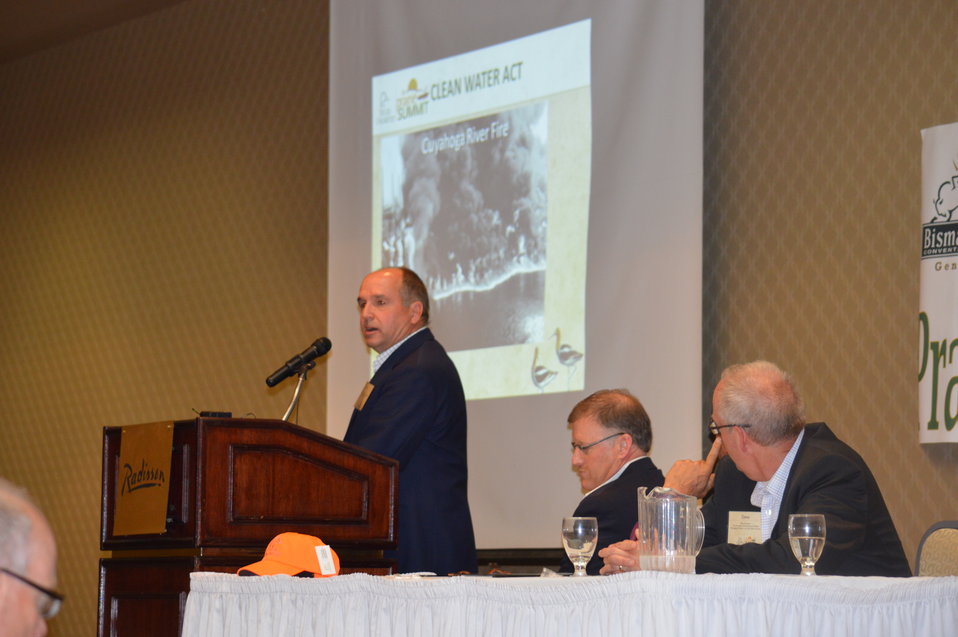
Jim Ringleman at the Prairie Summit

Jim Ringelman from Ducks Unlimited speaks at the Prairie Summit about Disincentives and Regulations.